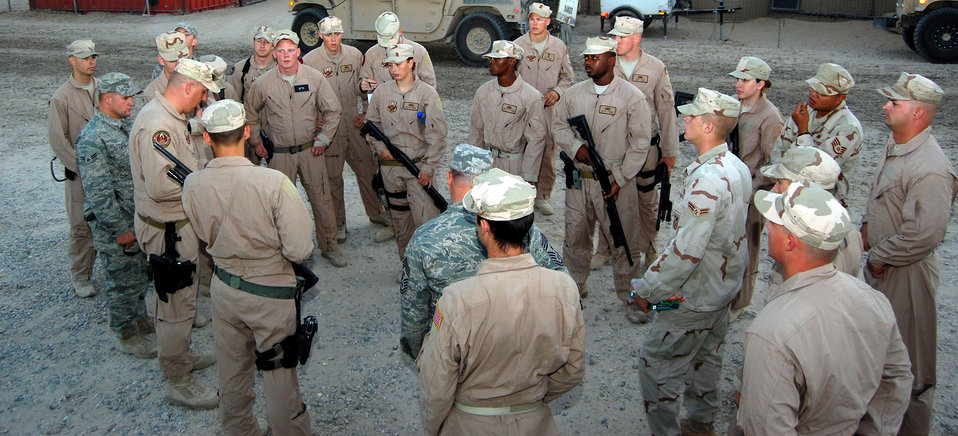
Convoy preparations

Fire teams from cobra and punisher squads come together to receive a convoy premission briefing Nov. 12 at Camp Bucca, Iraq. The two squads represent Airmen from Barksdale Air Force Base, La., Nellis AFB, Nev., Lackland AFB, Texas, and Moody AFB, Ga.